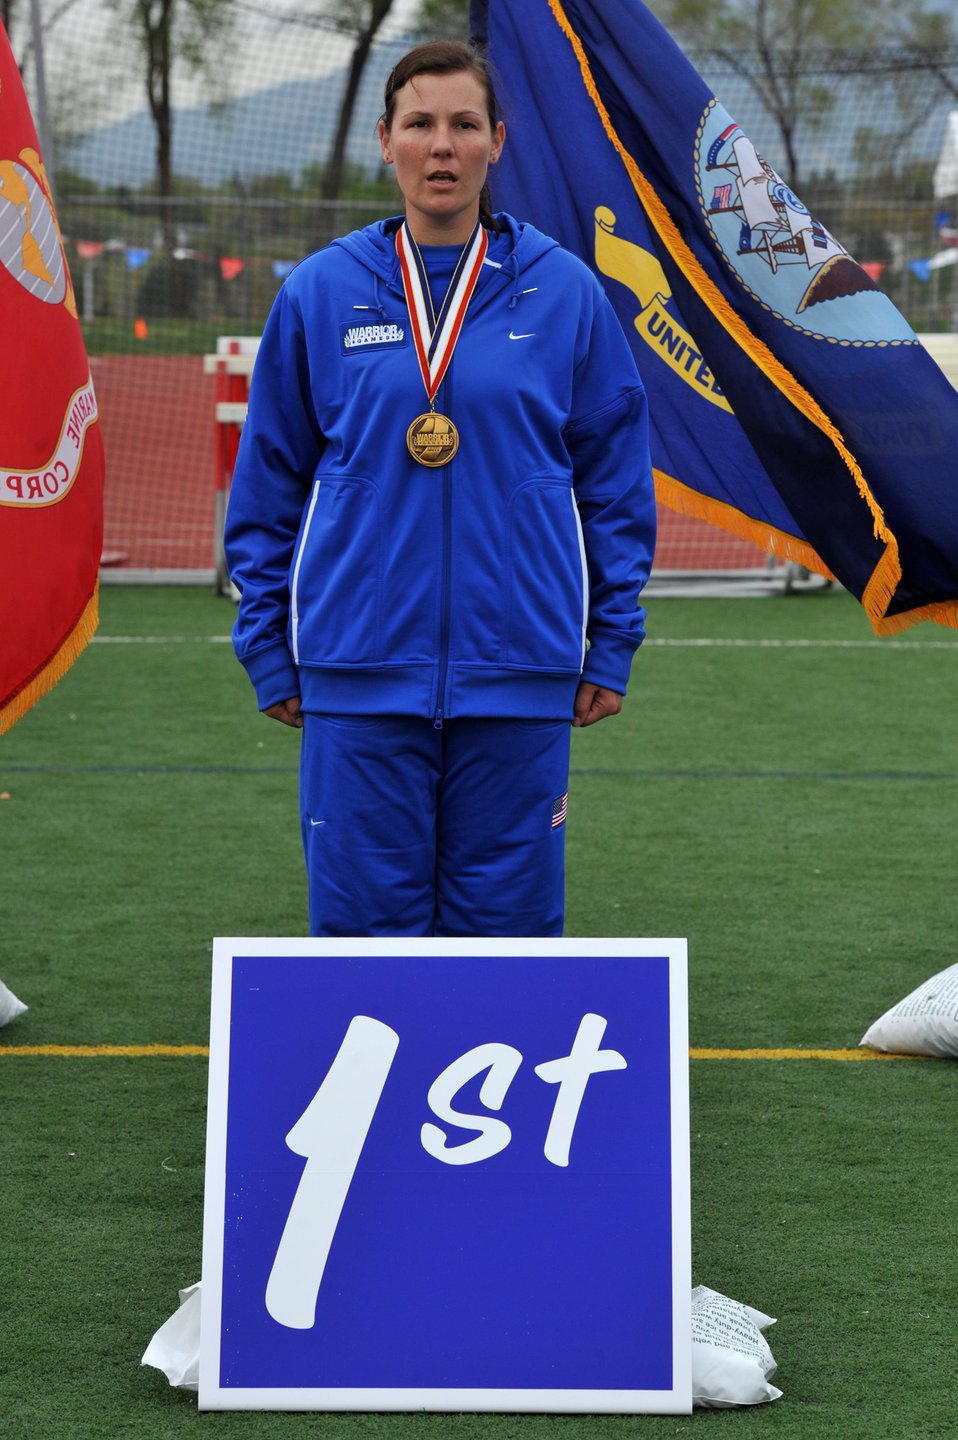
2011 Warrior Games

Air Force athlete Stacy Pearsall receives a gold medal after winning the 800 meter dash May 17, 2011, during the track competition at the 2011 Warrior Games at the U.S. Olympic Training Center in Colorado Springs, Colo. Some 200 wounded warriors and disabled veterans from all the military services are competing in paralympic-style athletic events May 16 through May 21.